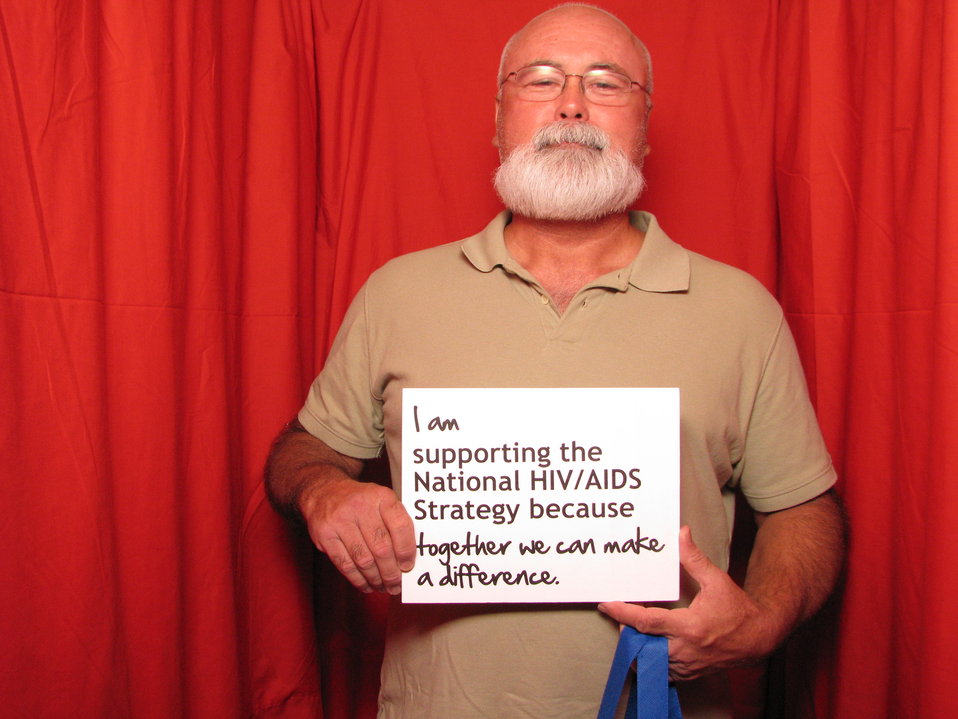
I am Supporting the National HIV/AIDS Strategy because Together We Can Make a Difference

From the AIDS.gov photo booth at the U.S. Conference on AIDS, September 2010 (Orlando, FL).